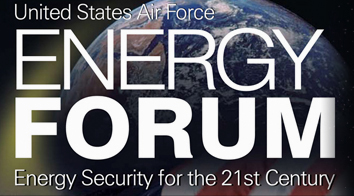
Air Force hosts energy industry forum

The Air Force's Energy Industry Forum March 8 to 9 in Arlington, Va., looks at the full spectrum of the service's energy program, from the demand side to supply side, as well as for infrastructure, vehicles and aircraft
takes place.